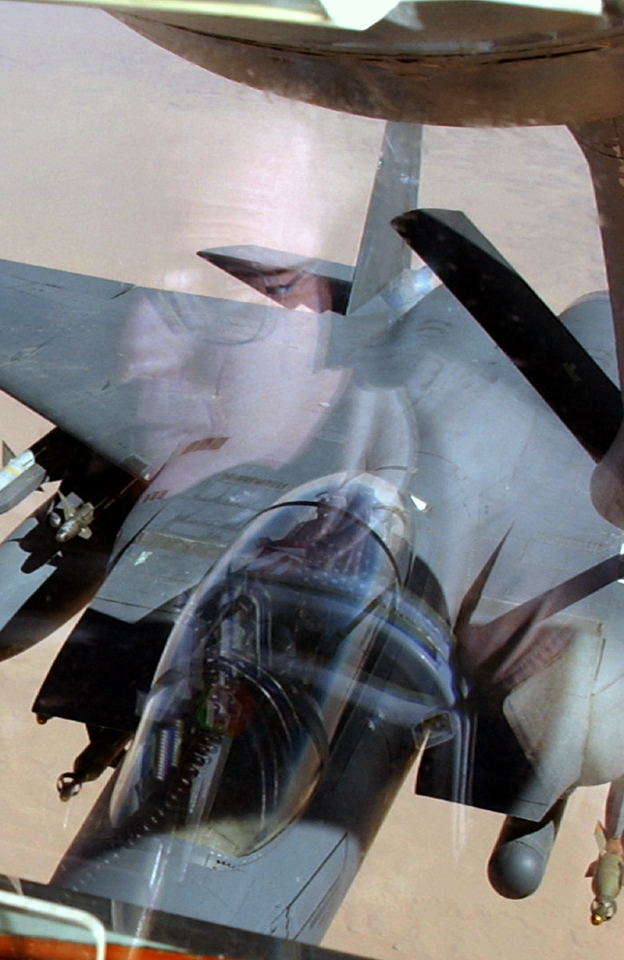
Reflections on refueling

OPERATION IRAQI FREEDOM -- An F-15E Strike Eagle prepares to receive fuel from a KC-135R Stratotanker. Master Sgt. Sam Blackwell, the boom operator, is seen reflected in the operator's window. Blackwell and the KC-135R are deployed from Pease Air National Guard Base, N. H.